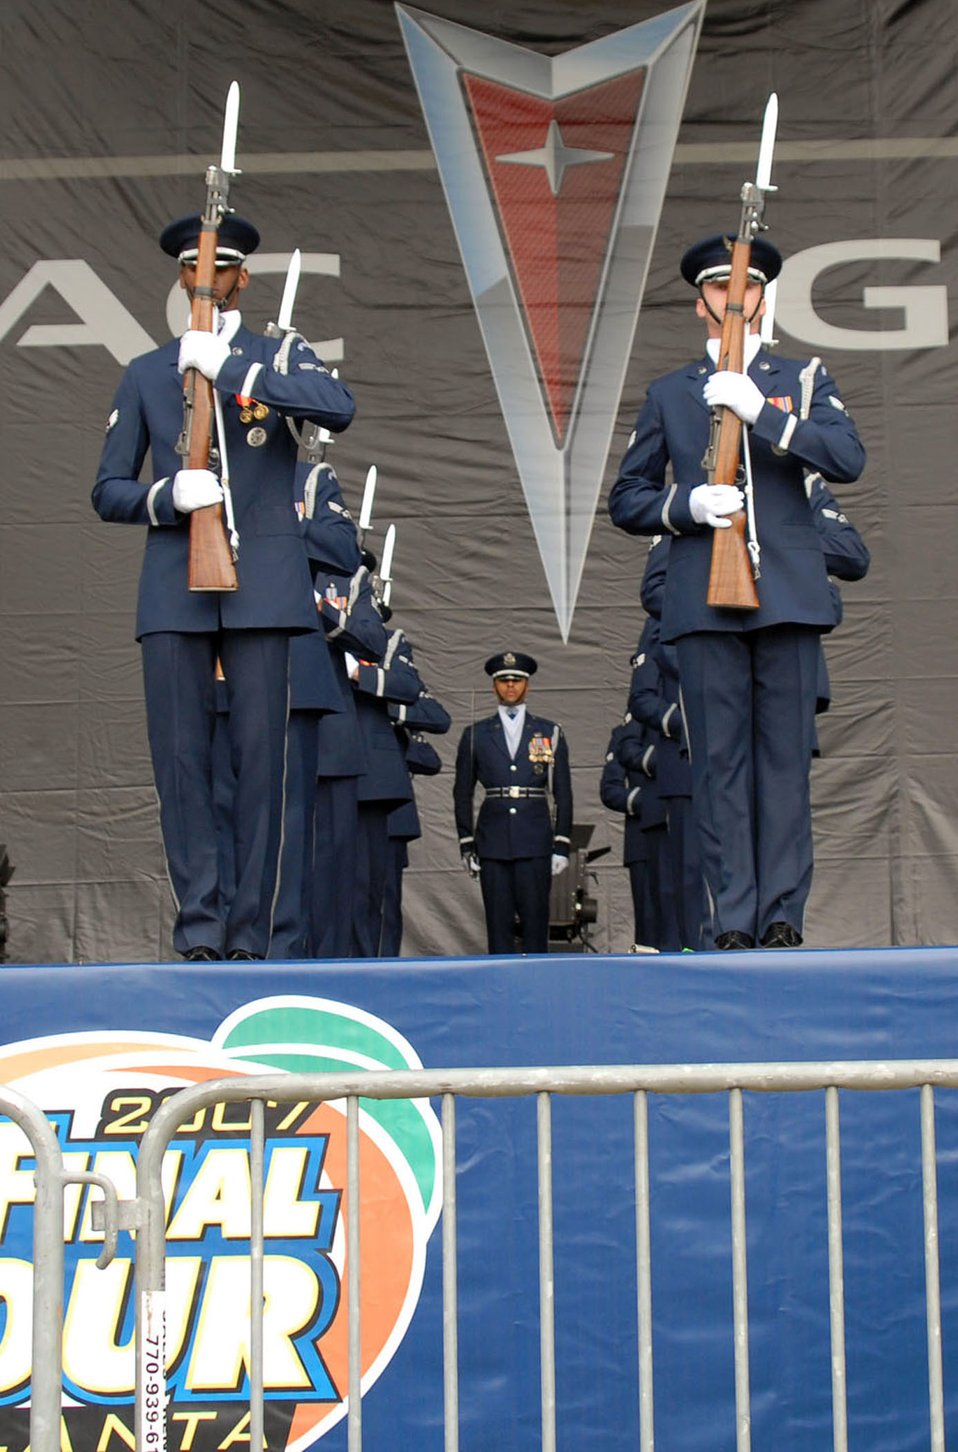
Honor Guard Drill Team keeping sharp for Air Force

Air Force Honor Guard Drill Team members perform at the opening ceremonies for the NCAA Final Four games at Centennial Olympic Park March 31in Atlanta. The drill team was invited to perform at events and ceremonies surrounding the Final Four Games March 31-April 2. The drill team recently returned from their latest 11-day tour around the U.S., that included visits to Atlanta; Hill Air Force Base, Utah; and Salt Lake City.